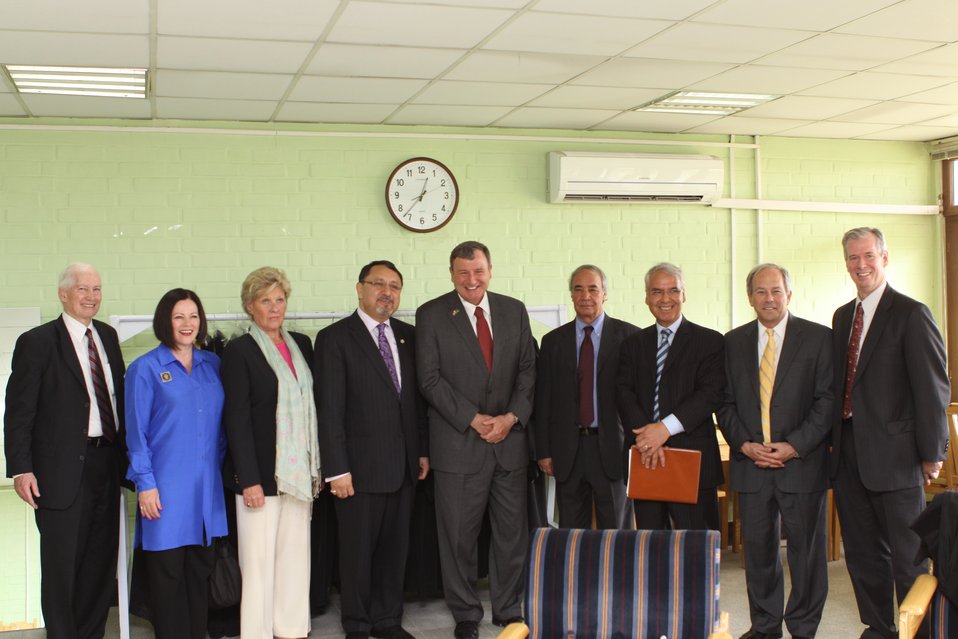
100526 AUAF Graduation 341